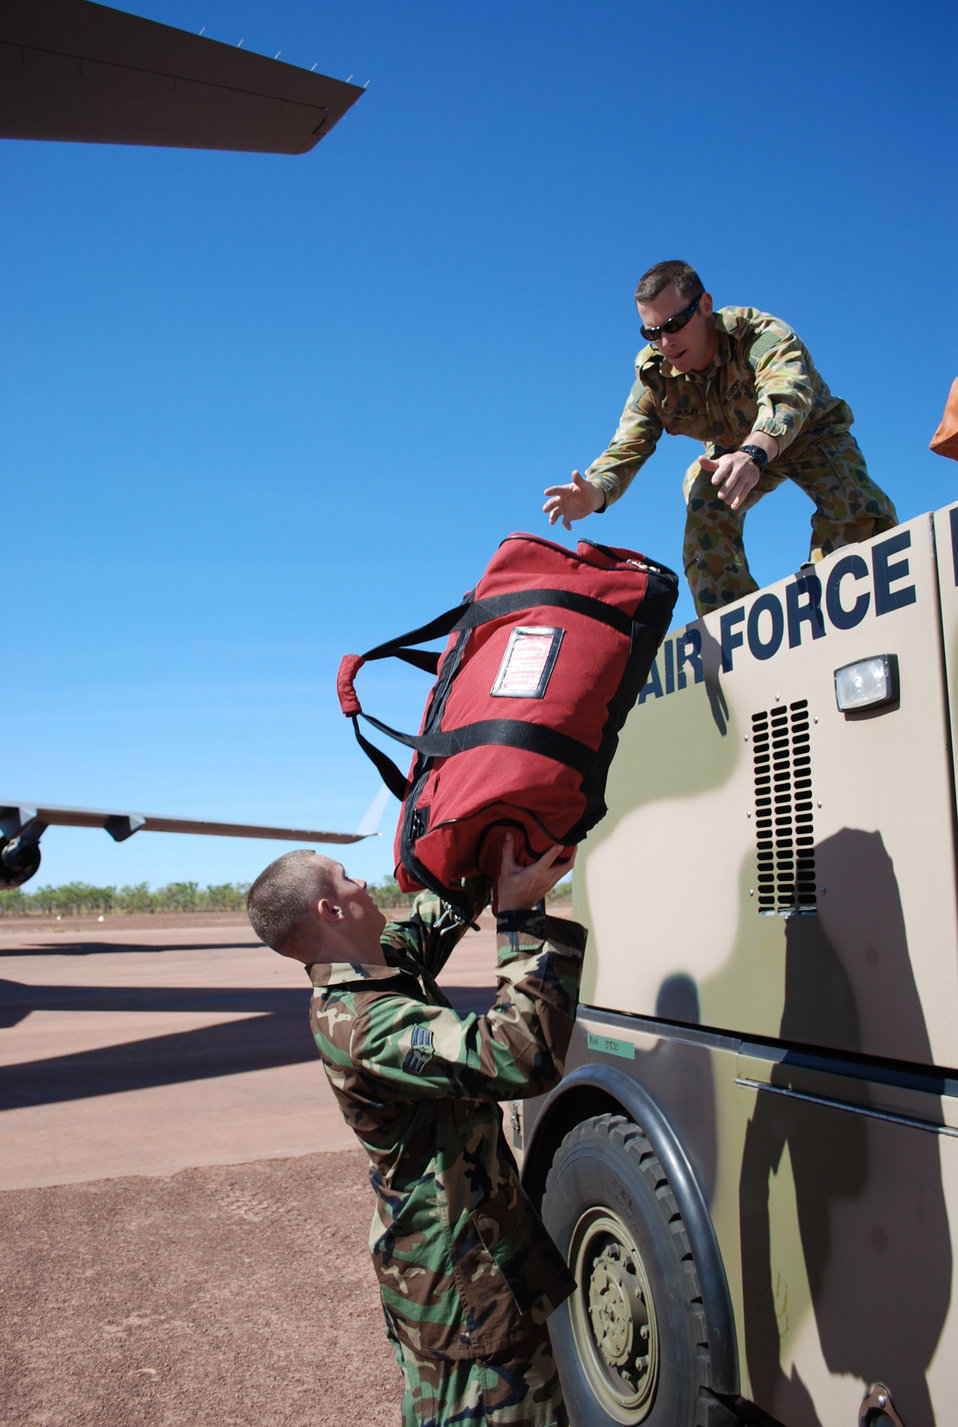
C-17 aircrew delivers Australian fire truck during Talisman Saber 2009

Senior Airman Shawn Pate passes fire equipment to Royal Australian Air Force Leading Aircraftsman Liam Varley July 19 at Bradshaw Field Training Area, Australia. LAC Varley loads the equipment on an E-One Titan fire engine as part of Talisman Saber 2009. Airman Pate is a firefighter from the 3rd Civil Engineer Squadron at Elmendorf Air Force Base, Alaska. LAC Varley is an aviation rescue firefighter.